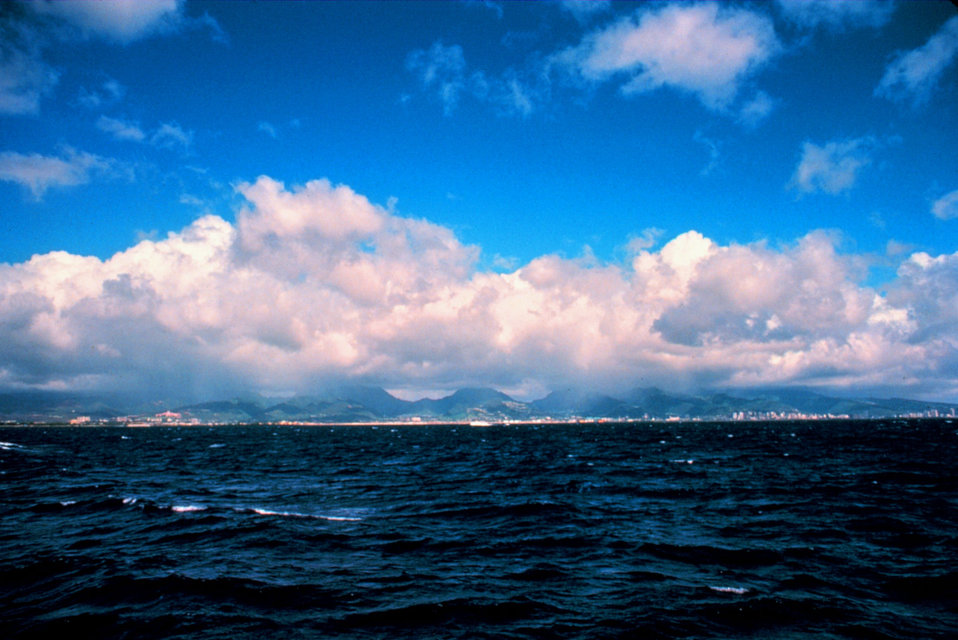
Cumulus congestus